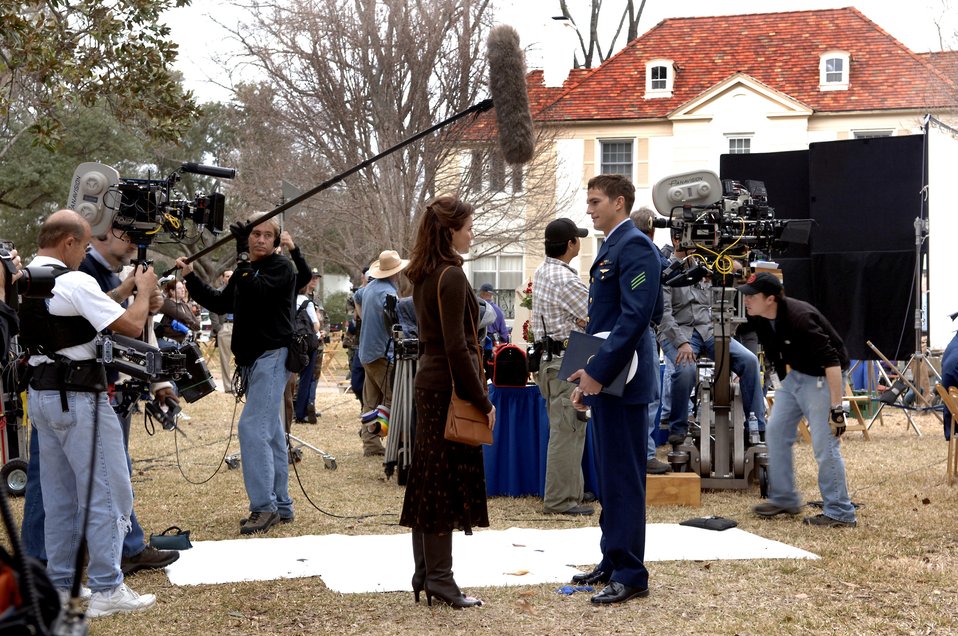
Barksdale Airmen help

BARKSDALE AIR FORCE BASE, La. (AFPN) -- Ashton Kutcher and Shelby Fenner films a scene from the movie